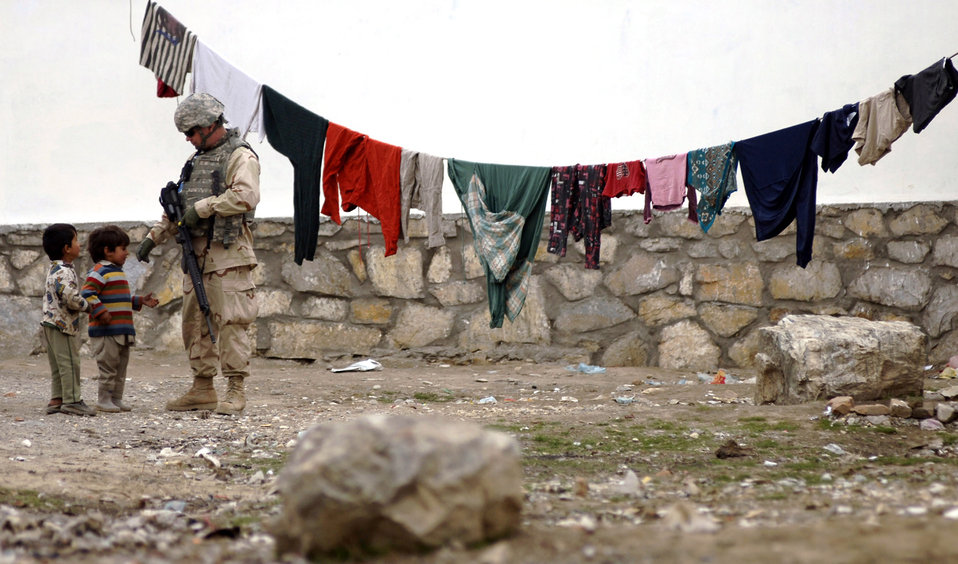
Joint forces volunteers donate time, goods

An Airman plays with local refugee children in Dar Ul Aman in support of the volunteer community reach program March 16. During the visits, some 200 bags of clothes, shoes and toys are distributed. The program volunteers provide this service every month thanks to donated items from U.S. citizens.